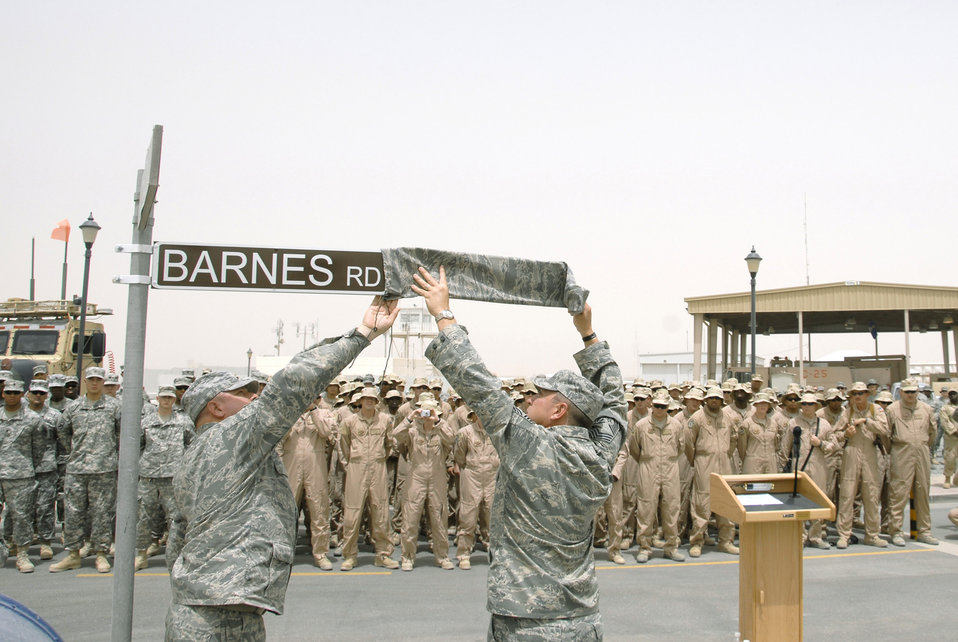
In his honor: Street named for Airmen killed in action

Chief Master Sergeant Carl Hunsinger (left) and Chief Master Sgt. Richard Bunce (center), unveil the new street sign during a dedication ceremony June 10 in Southwest Asia. The street dedication ceremony is a tribute to Airman 1st Class Eric Barnes. Airman Barnes, 20, of Lorain, Ohio, died June 10, 2007 as a result of an improved explosive device attack on an Air Force convoy about 100 miles south of Baghdad, Iraq. He was deployed from the 90th Logistics Readiness Squadron at F.E. Warren Air Force Base, Wyo. Chief Hunsinger is the 386th Air Expeditionary Wing command chief and Chief Bunce is the 100th Logistics Readiness Squadron chief enlisted manager, who Airman Barnes worked for at the time of his death in 2007.